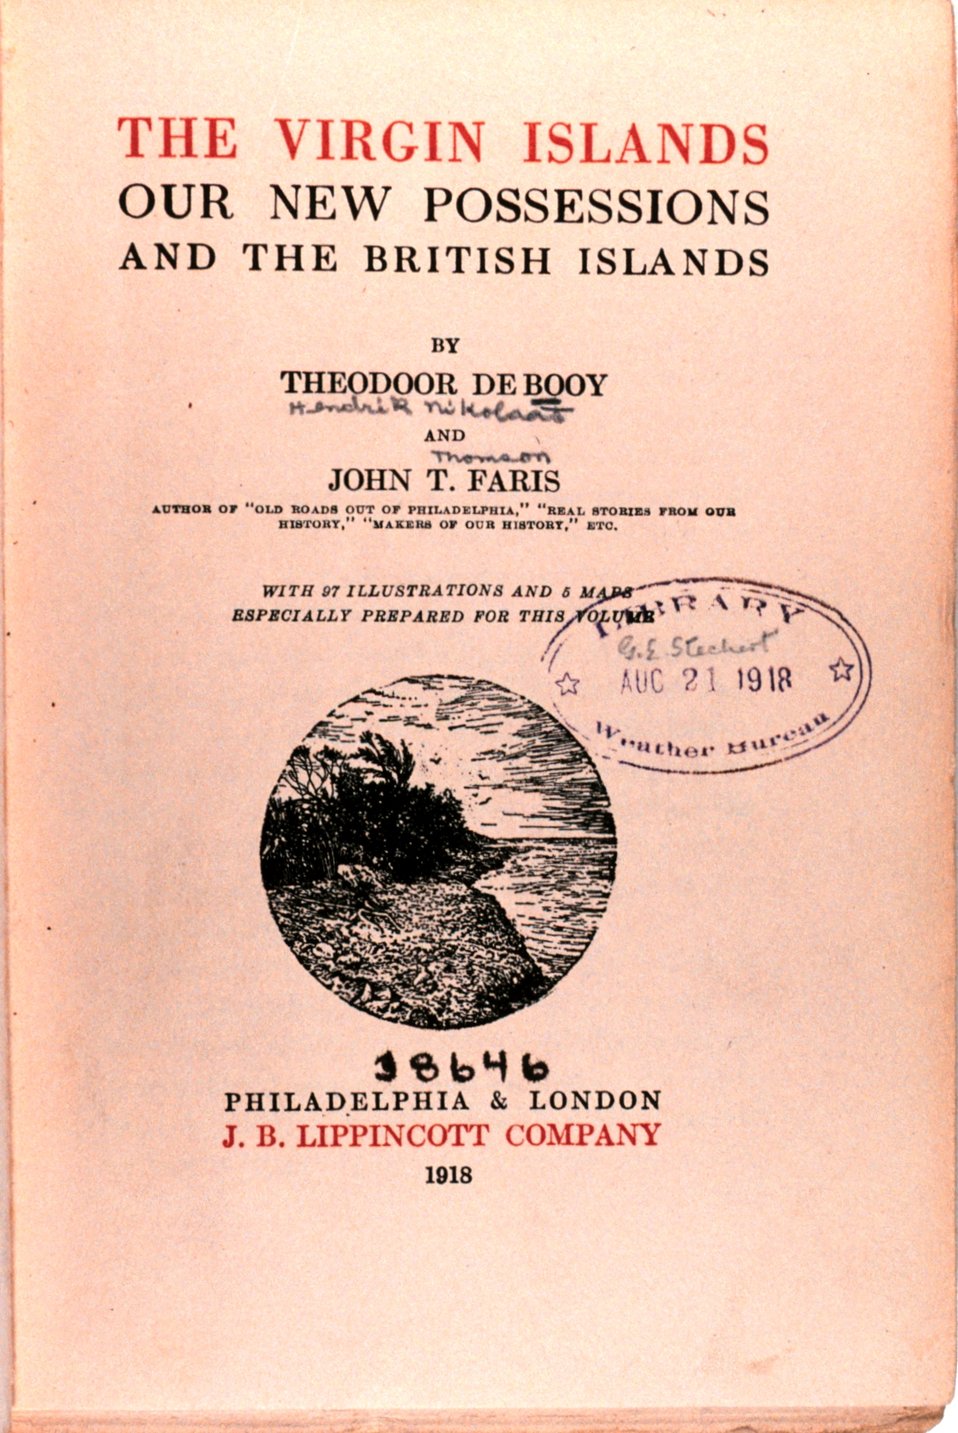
Title page: 'The Virgin Islands Our New Possessions and the British Islands', by Theodoor De Booy and John T. Faris, 1918. J. B. Lippincott and Company, Philadelphia. Library Call Number C/hc100 V81 B.